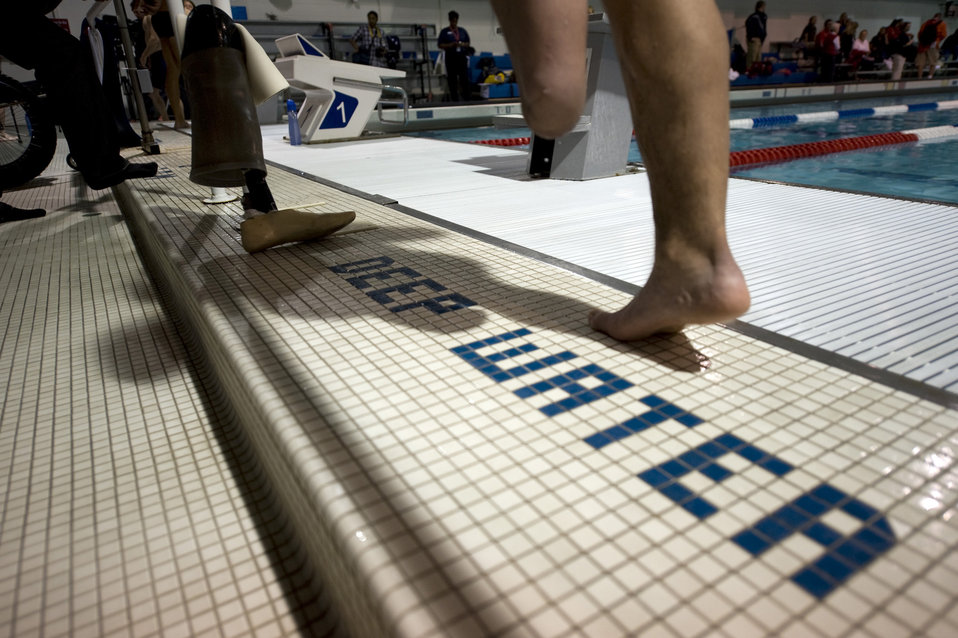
Warrior Games Airmen prepare for competition

Second Lt. Ryan McGuire walks to the diving block during swim practice May 11, 2010, at the Olympic Training Center in Colorado Springs, Colo. Lieutenant McGuire is a below-the-knee-amputee competing in the inaugural Warrior Games through May 14, 2010. Lieutenant McGuire lost his leg in a boating accident, he is assigned to Laughlin Air Force Base, Texas.